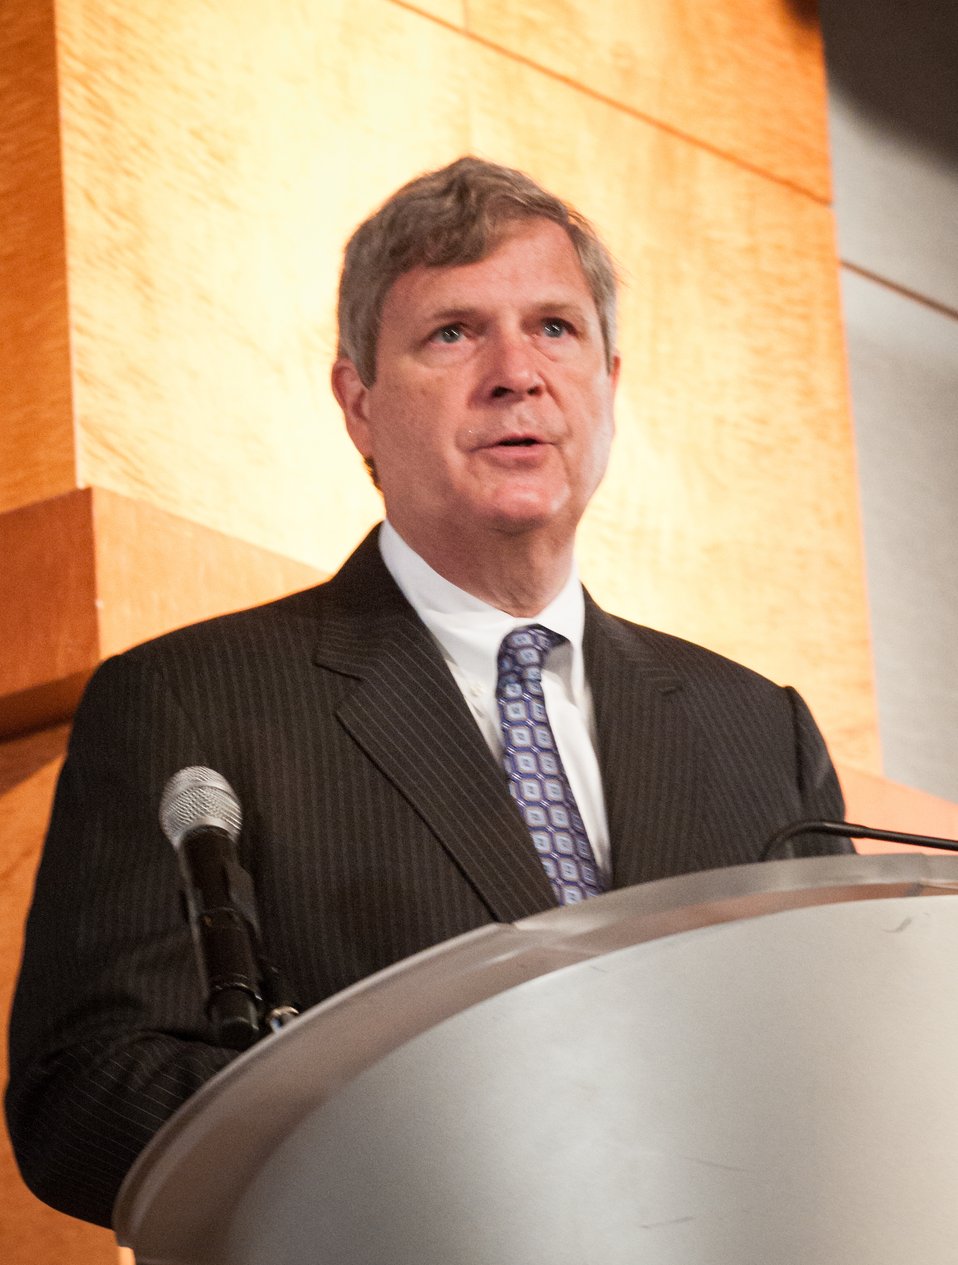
Agriculture Secretary Tom Vilsack makes opening remarks at the G-8 International Conference on Open Data for Agriculture in Washington, D.C. on Monday, Apr. 29, 2013. Secretary Vilsack announced the launch of a new 'virtual community' as part of a suite of actions, including the release of new data, that the U.S. is taking to give farmers and ranchers, scientists, policy makers and other members of the public easy access to publicly funded data to help increase food security and nutrition.